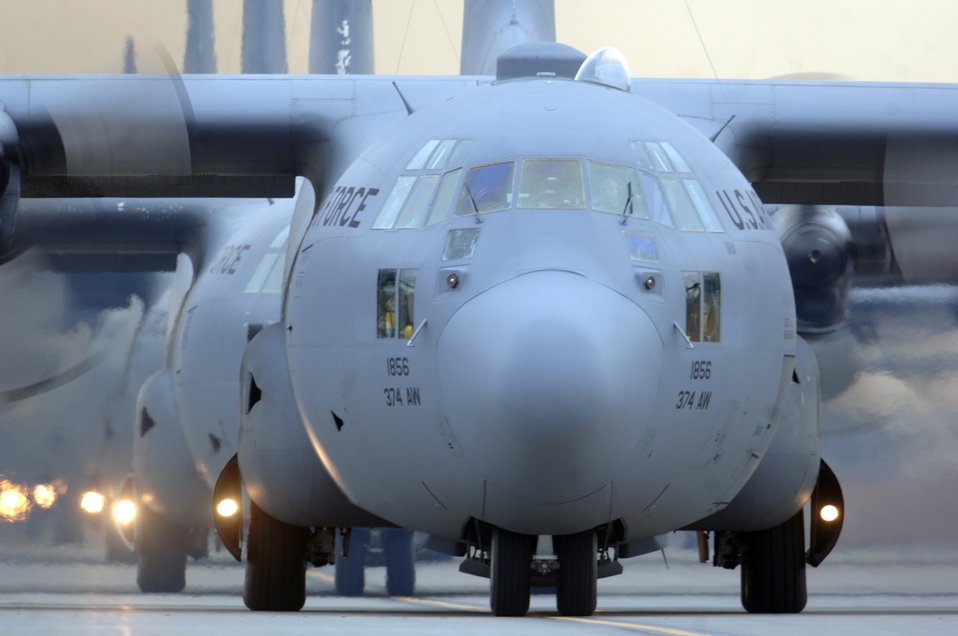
Hercules row

YOKOTA AIR BASE, Japan (AFPN) -- C-130 Hercules aircraft from the 36th Airlift Squadron taxi out for a mission during a six-ship sortie. The squadron is the only forward-based tactical airlift squadron in the Pacific region. They provide C-130 aircrews to conduct theater airlift, special operations, aeromedical evacuation, search and rescue, repatriation and humanitarian relief missions.